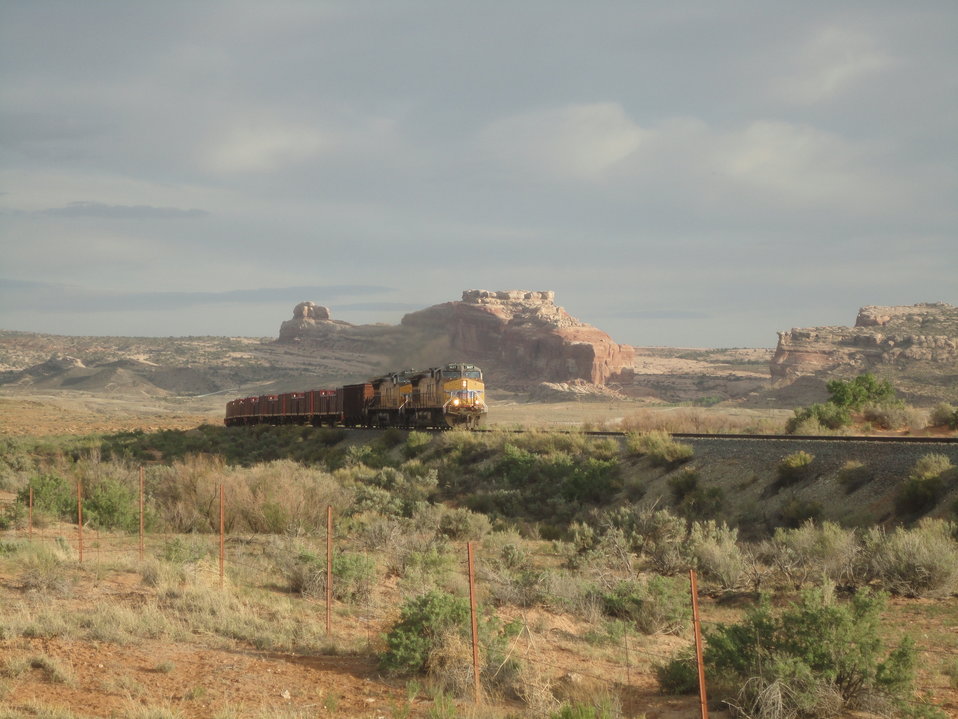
Moab train shipment

This is a photo of the first train from the Moab site shipped under the new Remedial Action Contract, which is held by Portage, Inc., and occurred Wednesday, May 2, 2012.